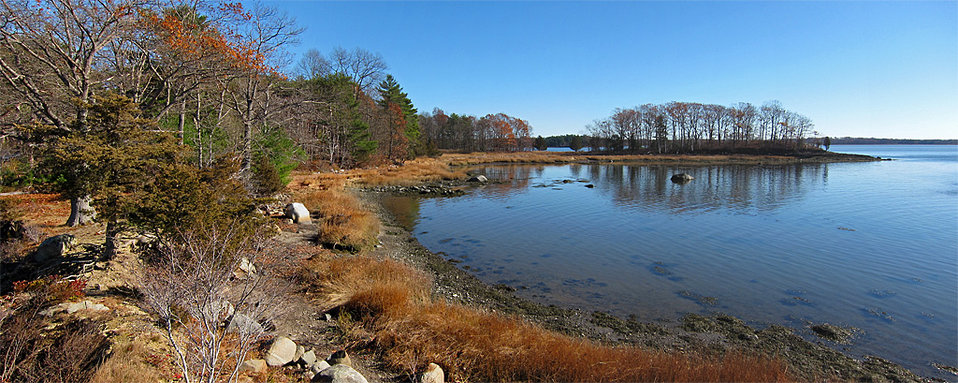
Great Bay National Wildlife Refuge in Newington, New Hampshire